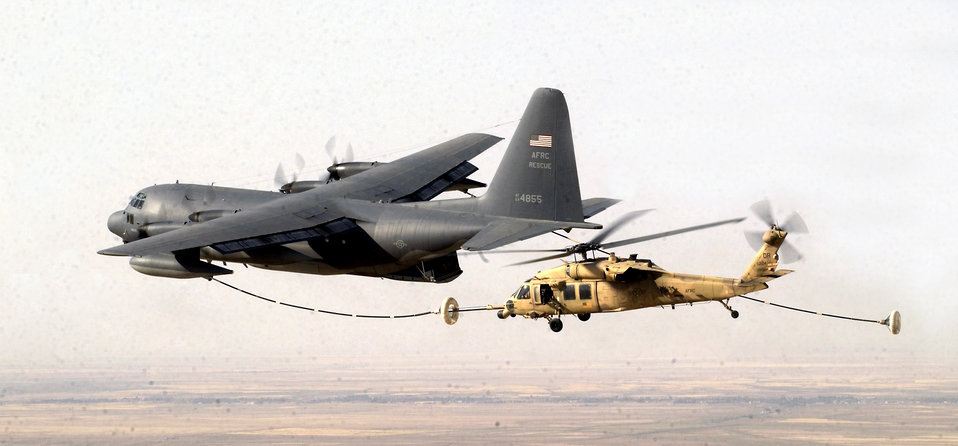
Taking on gas

OPERATION IRAQI FREEDOM (AFPN) -- An HH-60G Pave Hawk receives fuel from an HC-130 on May 5 in support of Operation Iraqi Freedom. Both aircraft belong to Air Force Reserve Command's 920th Rescue Wing at Patrick Air Force Base, Fla.